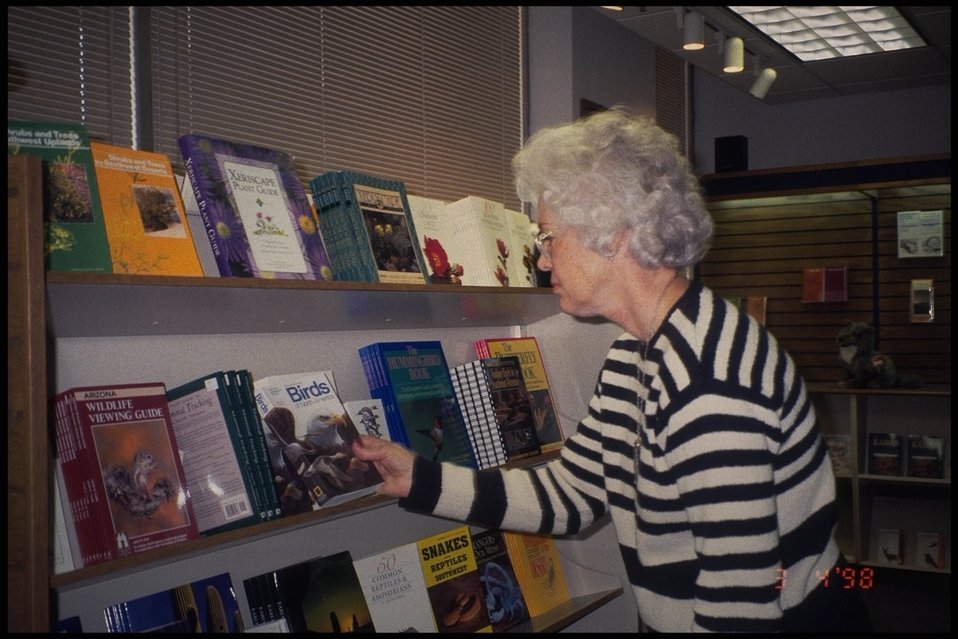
Get your maps, books and licenses here! The Arizona Public Lands Information Center (PLIC) is a partnership between the nonprofit Public Lands Interpretive Association and the Bureau of Land Management.